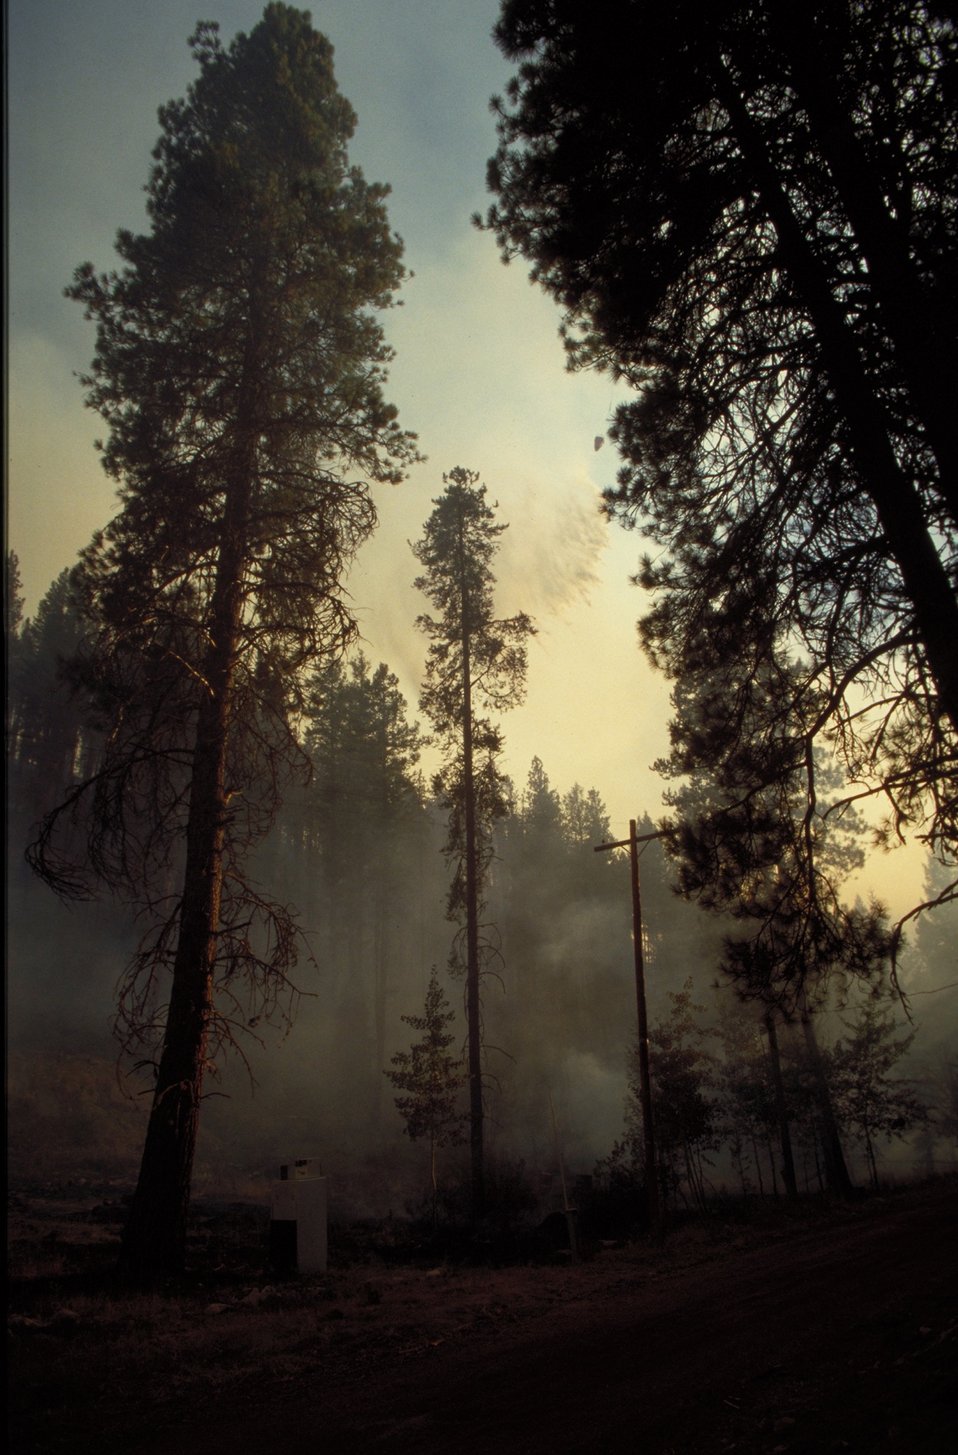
Smokey skies near burn area Fire Season 2000 Lower Snake River District LSRD